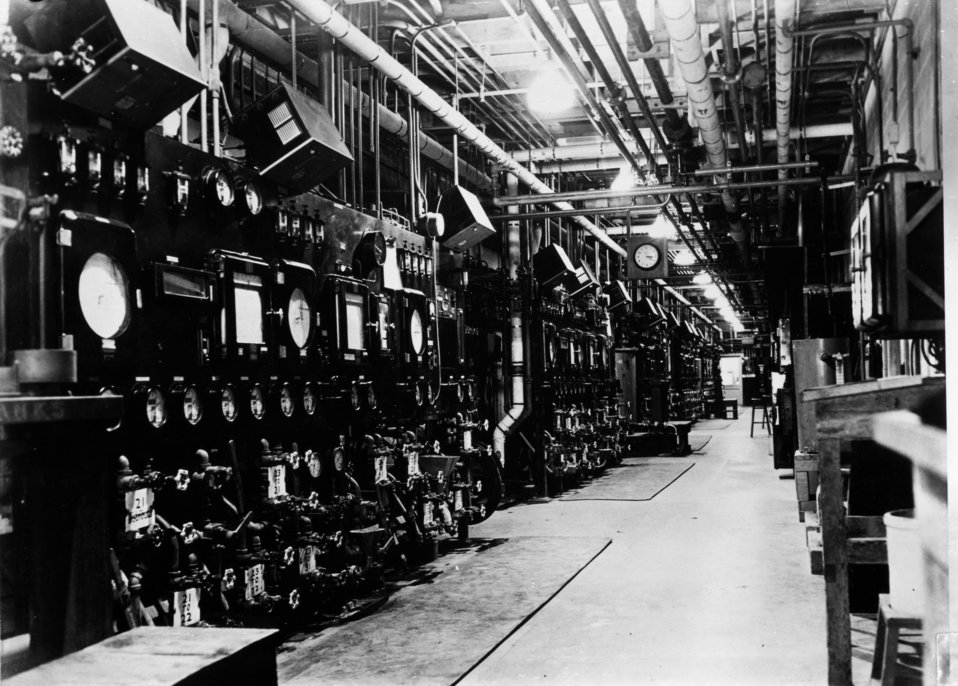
X-10 at Oak Ridge